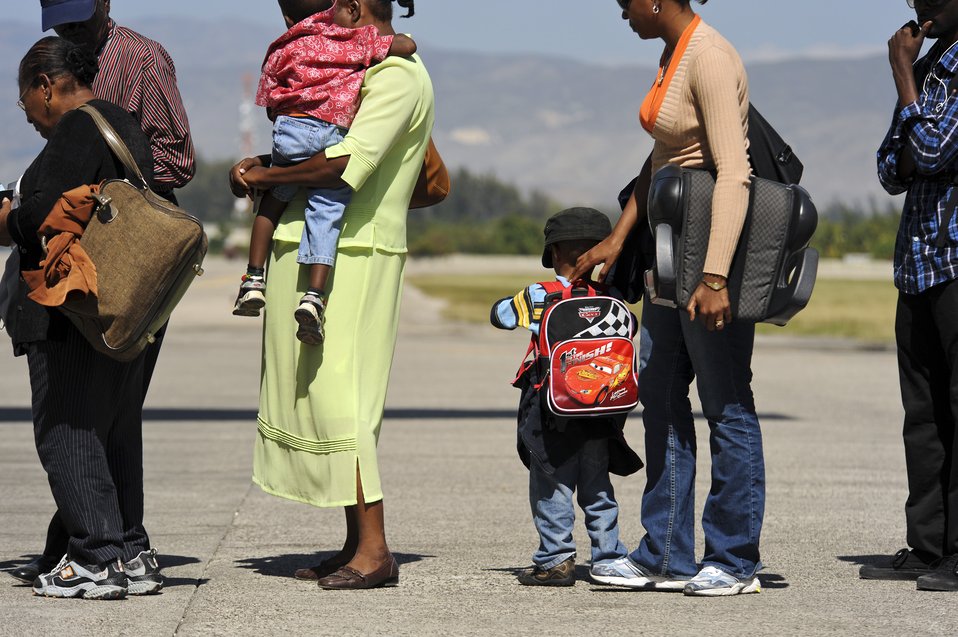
Evacuation

Haitians stand in line as they wait to board a C-17 Globemaster II at Toussaint L'Ouverture International Airport in Port-au-Prince, Haiti, Jan. 23, 2010. Aircraft from all over the world fly in and out to drop off humanitarian aid and transport people out of the Haiti in the aftermath of the devastating earthquake that struck the country Jan. 12.